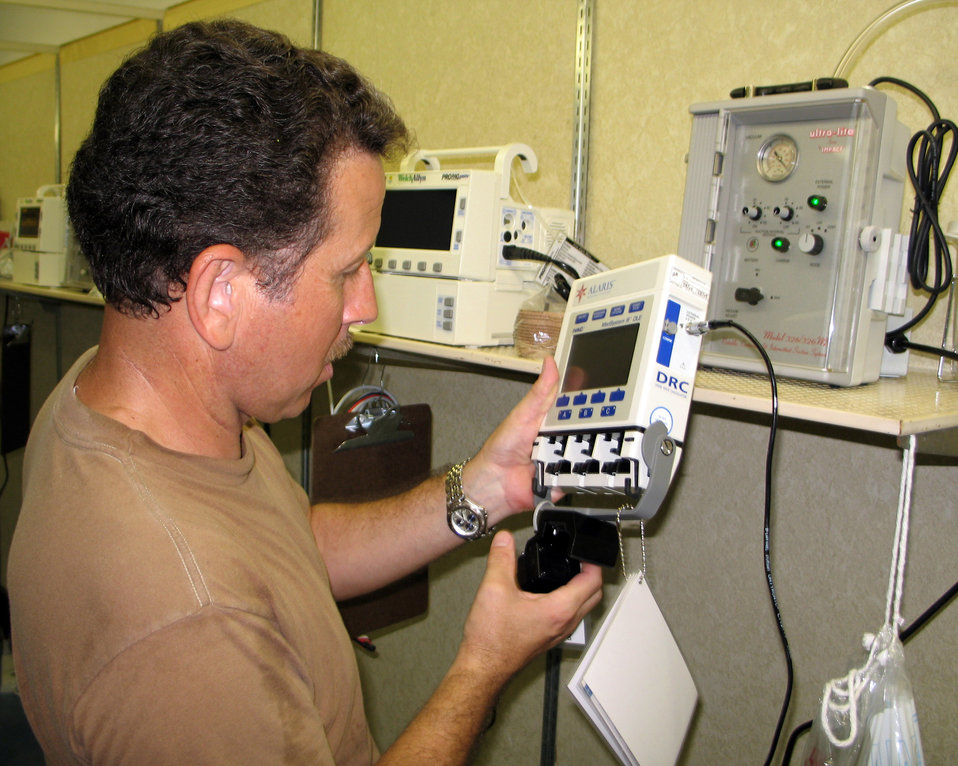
Task Force Compassion

ELLINGTON FIELD, Texas -- Tech. Sgt. Gilbert Cisneros Jr. sets up medical equipment before the opening of a 10-bed medical treatment facility here. Sergeant Cisneros is a member of Task Force Compassion established in support of the Hurricane Rita relief effort.